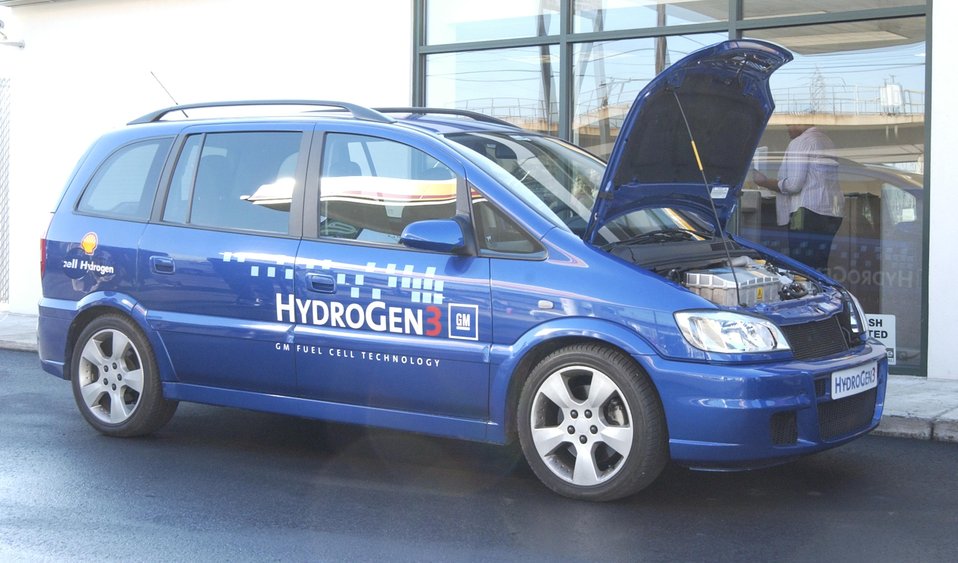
A GENERAL MOTORS HYDROGEN FUEL CELL VEHICLE.

THE DEPARTMENT OF ENERGY JOINED SHELL HYDROGEN AND GENERAL MOTORS ON NOVEMBER 10, 2004 AT THE OPENING OF THE FIRST HYDROGEN REFUELING STATION IN WASHINGTON, DC. THIS STATION IS THE FIRST INTEGRATED GASOLINE/HYDROGEN STATION IN NORTH AMERICA. THE SITE WILL BE USED TO REFUEL GENERAL MOTORS FUEL CELL VEHICLES IN THE DOE VEHICLE AND INFRASTRUCTURE LEARNING DEMONSTRATION AND VALIDATION PROJECT. THIS IS THE FIRST STATION TO BE DEPLOYED IN A POTENTIAL WASHINGTON, DC TO NEW YORK HYDROGEN CORRIDOR.